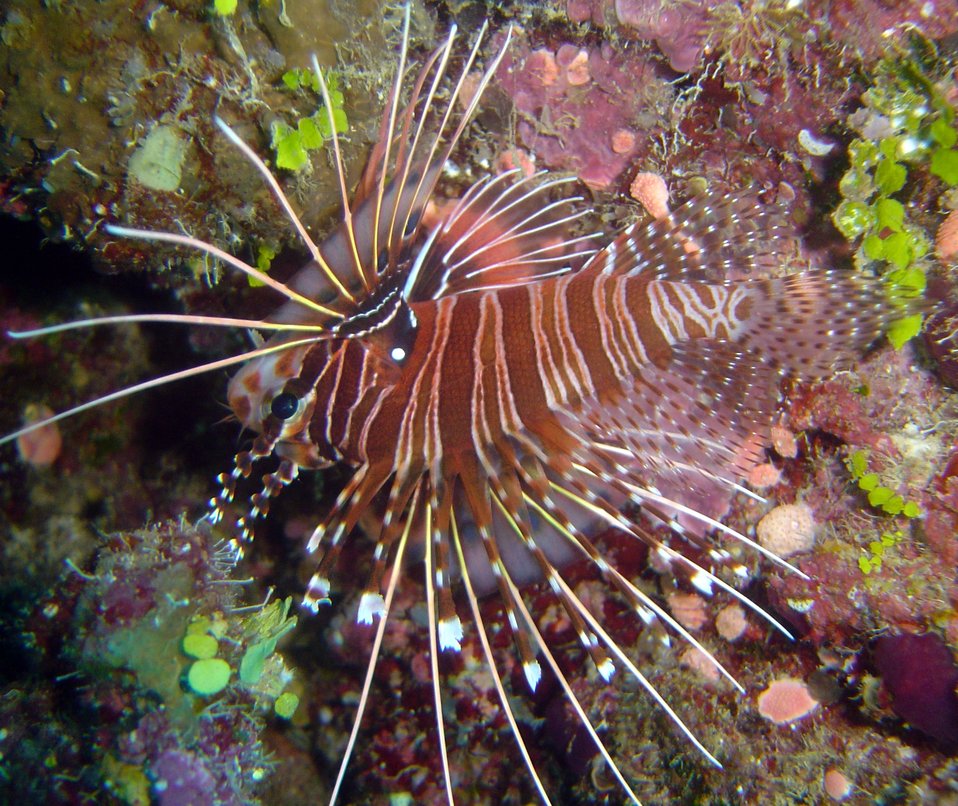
Spotfin lionfish (Pterois antennata).